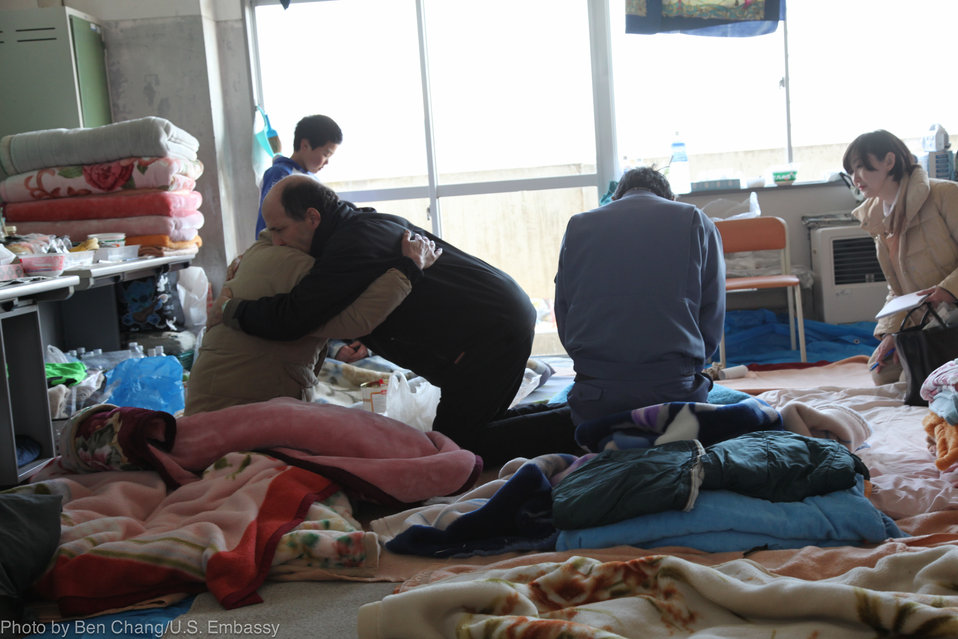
Ambassador Roos Visits Disaster Victims

U.S. Ambassador to Japan John Roos visits disaster victims at an emergency shelter in Ishinomaki, near Sendai, Japan, on March 23, 2011.